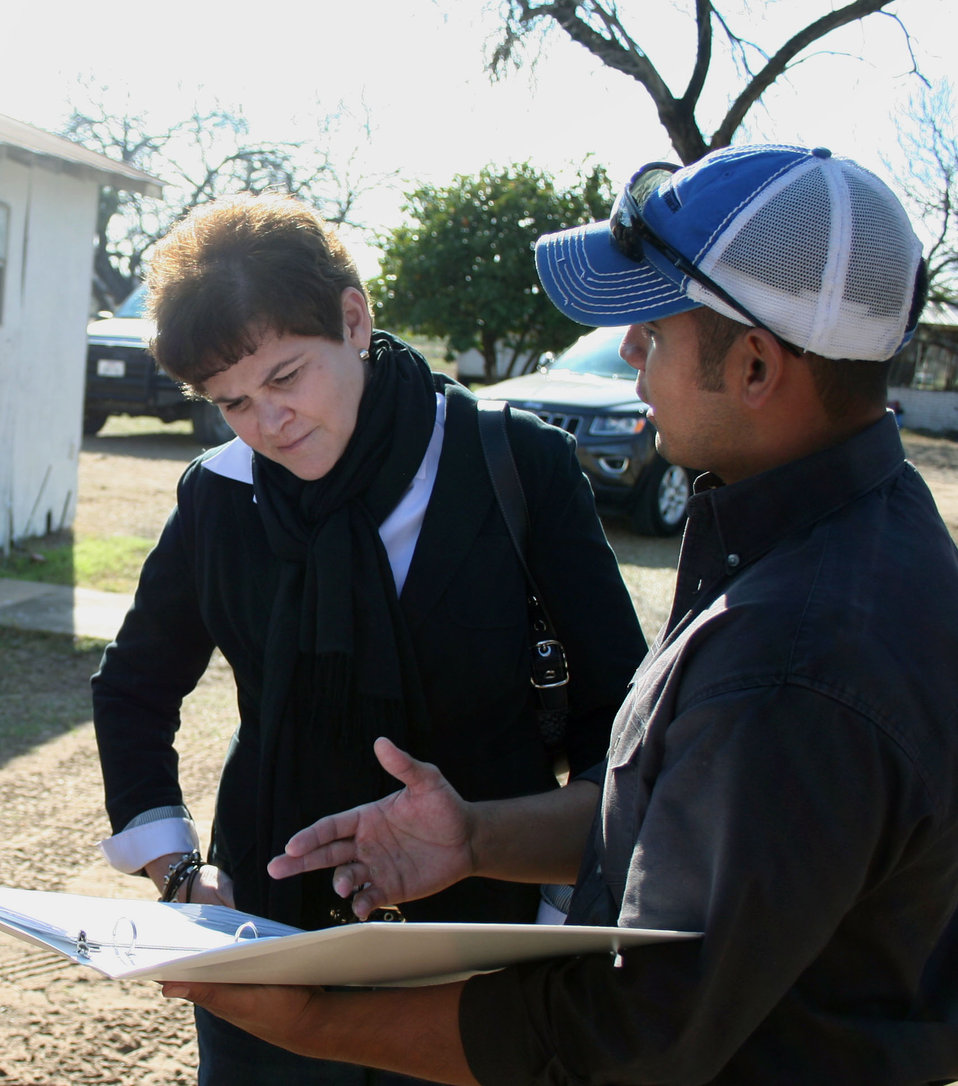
Miguel Ruiz shows Agriculture Deputy Secretary Krysta Harden his ranch notebook showcasing his cattle and the work he has done on the ranch in Lytle, TX, with his U.S. Department of Agriculture (USDA) Farm Service Agency (FSA) operating loan, on Friday, Feb. 28, 2014.